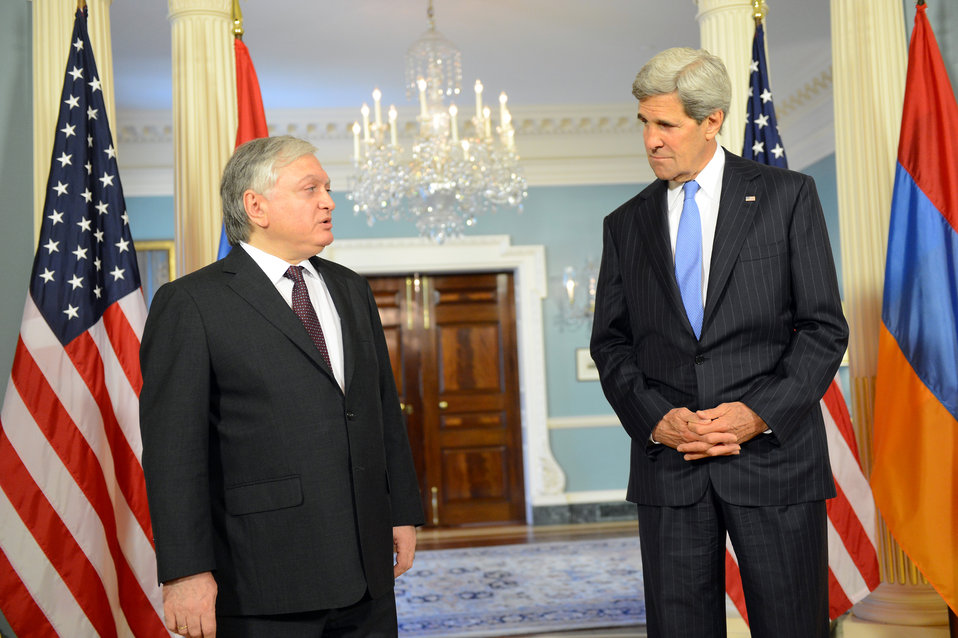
Secretary Kerry and Armenian Foreign Edward Nalbandian Address Reporters

U.S. Secretary of State John Kerry and Armenian Foreign Minister Edward Nalbandian address reporters before their bilateral meeting at the U.S. Department of State in Washington, D.C., on June 4, 2013.